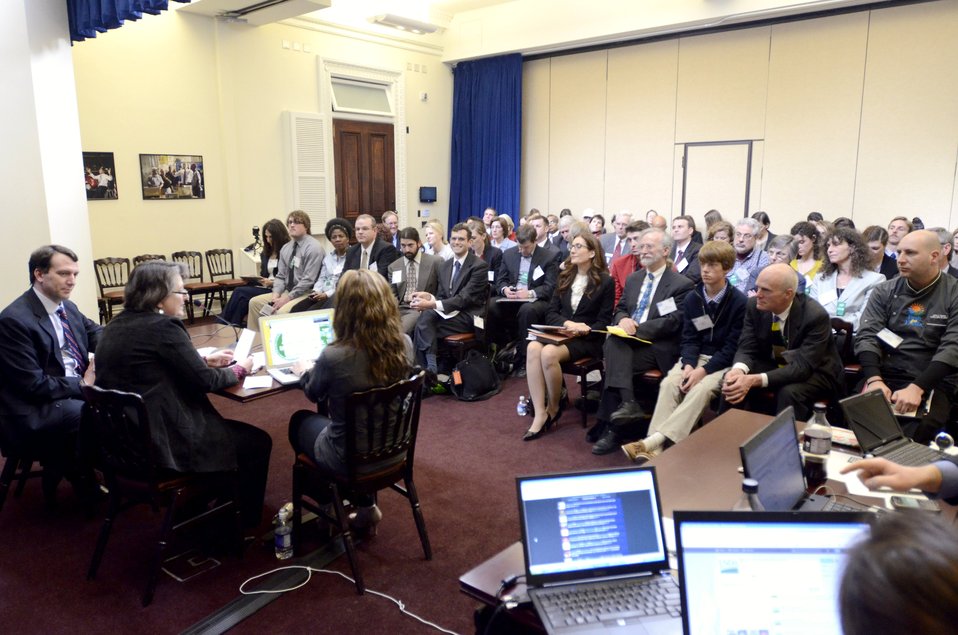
Agriculture Deputy Secretary Kathleen Merrigan (at table, center), and White House Office of Public Engagement Director Jon Carson (at table, left) conducted a Know Your Farmer Compass event that utilized twitter social media to continue the National Conversation on Local and Regional Food projects and how they offer economic opportunities to local farmers, ranchers and food entrepreneurs. Using the new web-based Know Your Food Compass, the conversation covered many aspects about food, such as infrastructure, stewardship, local meat and poultry, Healthy food access, careers in agriculture and local food knowledge. The virtual conversation took place at the White House, and twitter was used to expand the conversation worldwide, from Washington, D.C., on Monday, March 5, 2012. Unlike most events where mobile communication devices are asked to be turned off, here it was asked that they remain on allowing people to have social media conversations.